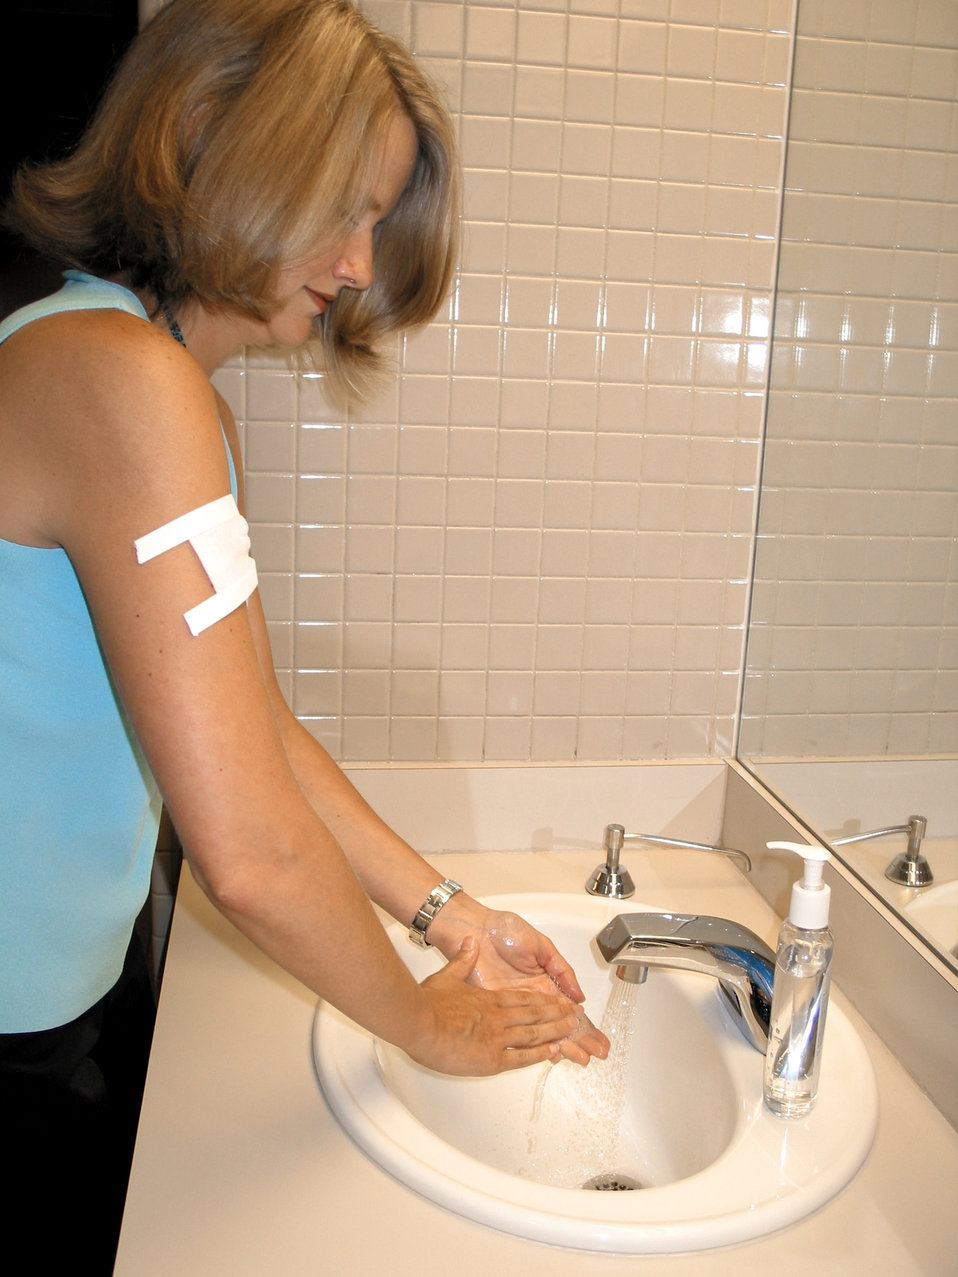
This image demonstrates how a smallpox vaccinee washes her hands after handling her vaccination site bandage.